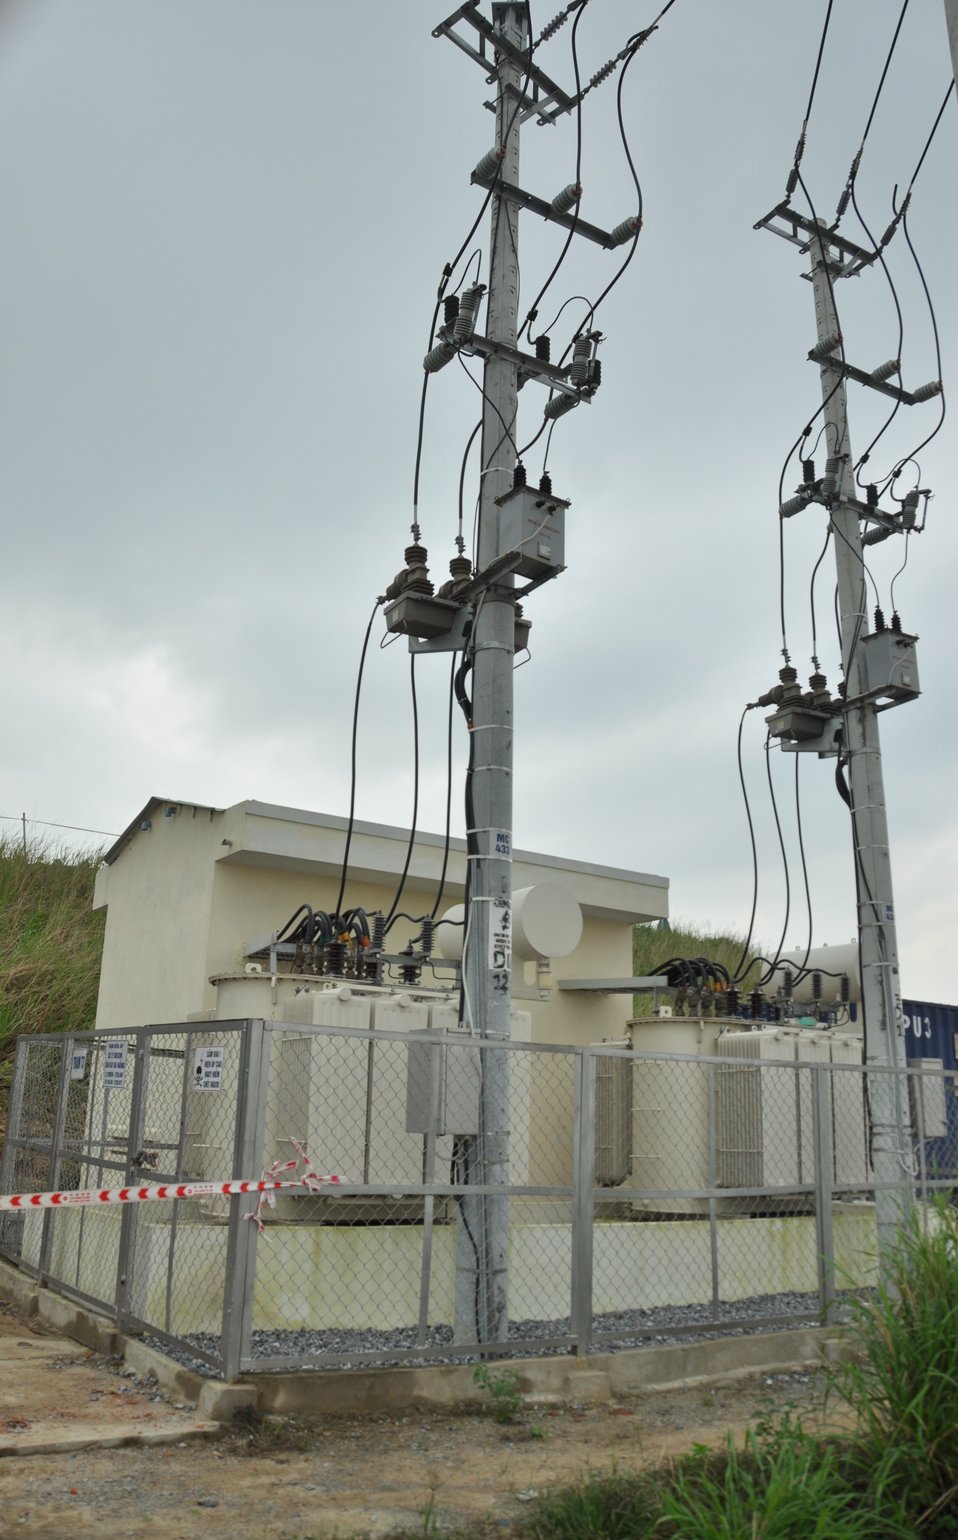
USAID Dioxin Contamination Project Progress: Electrical Power Station

Progress at the Environmental Remediation of Dioxin Contamination Project at the Danang Airport

December 19, 2013